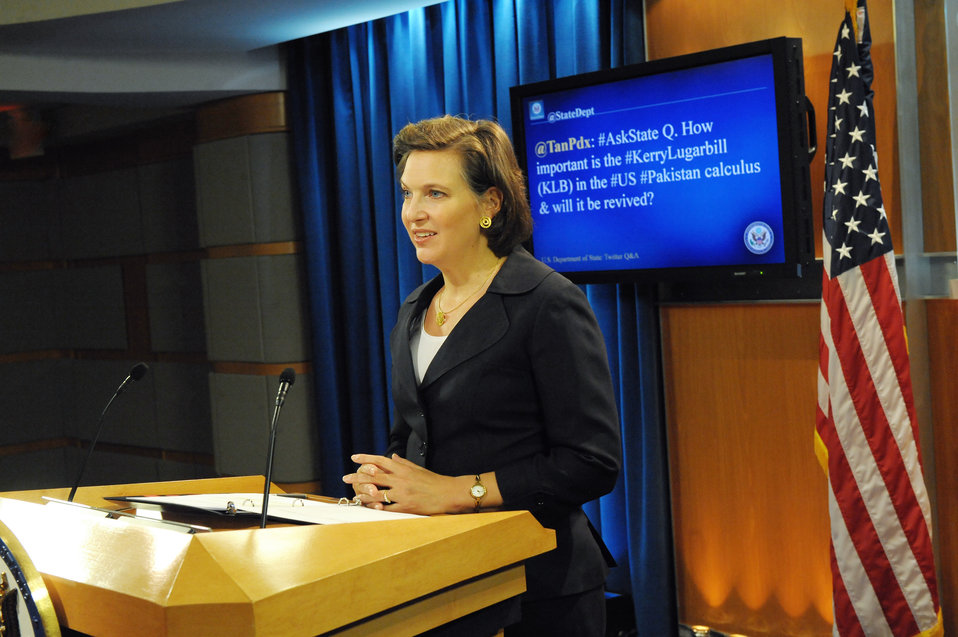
Spokesperson Nuland Responds to a Question from @StateDept

Victoria Nuland, Spokesperson for the U.S. Department of State, answers a question selected from the Department’s official English Twitter feed, @StateDept, on January 27, 2012.